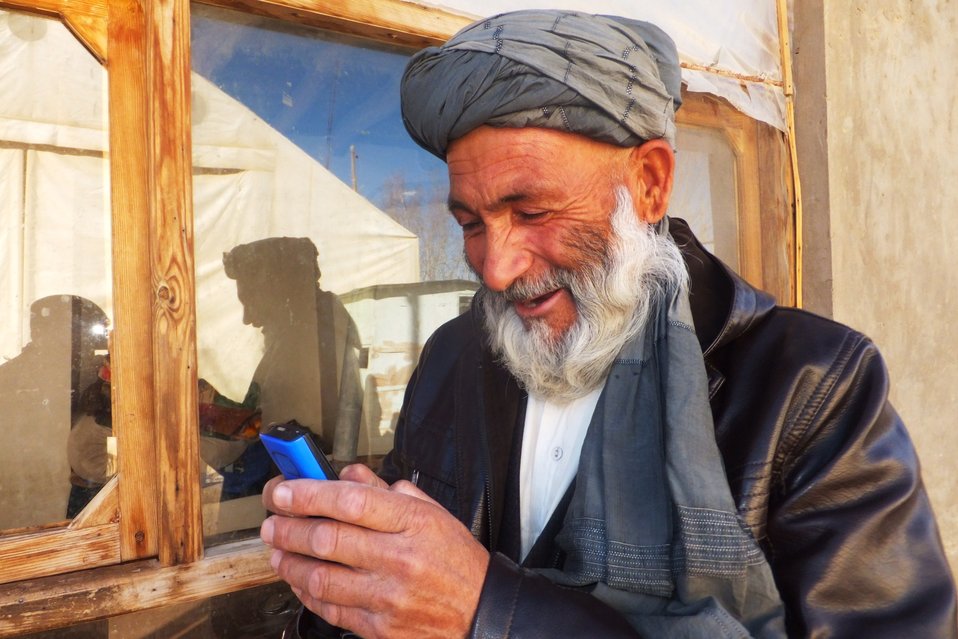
A Chaghcharan resident reading an SMS, highlighting government achievements, which was sent by the Ghor Deputy Provincial Governor on December 2